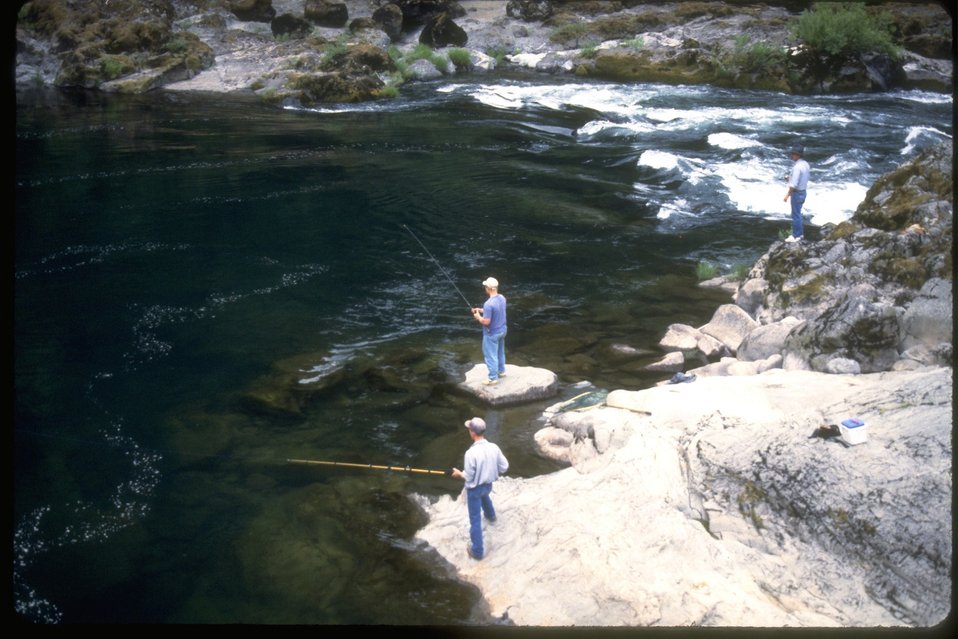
Fishing below Windy Rock.